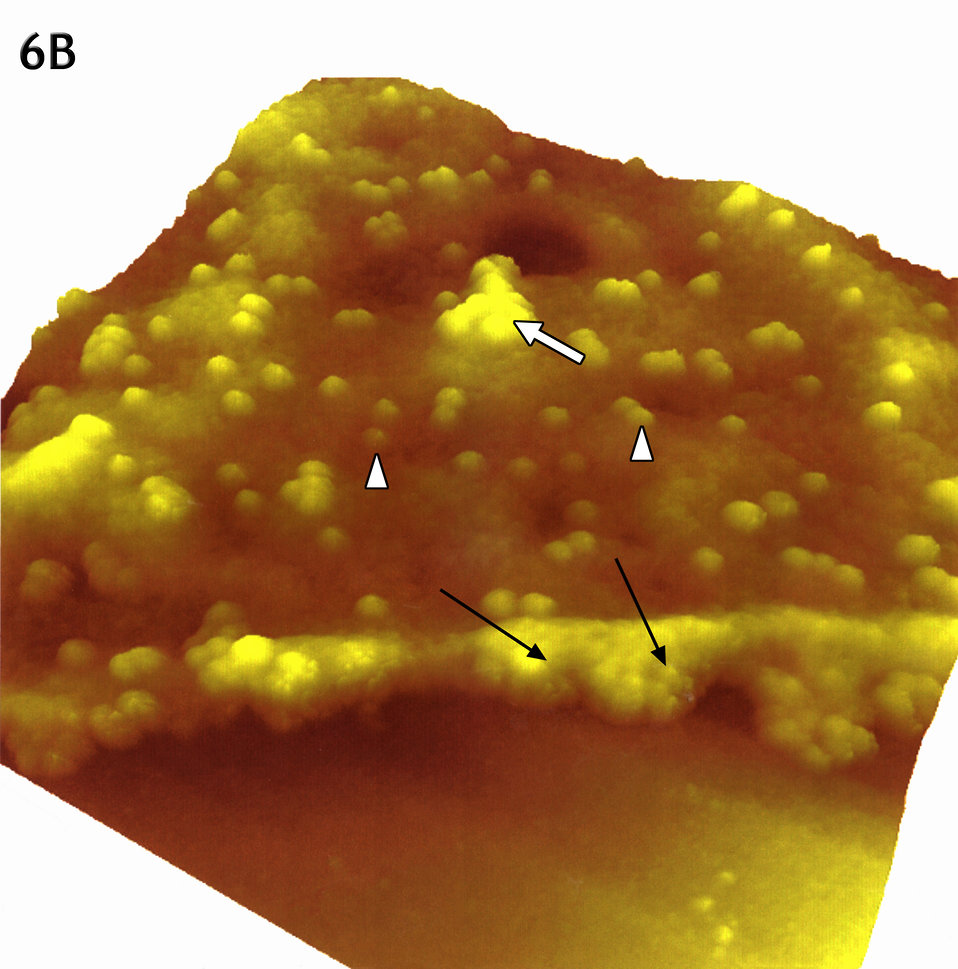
This is a three-dimensional reconstruction of PHIL#6413-6415, showing the puffy edge of a SARS infected Vero E6 culture cell.